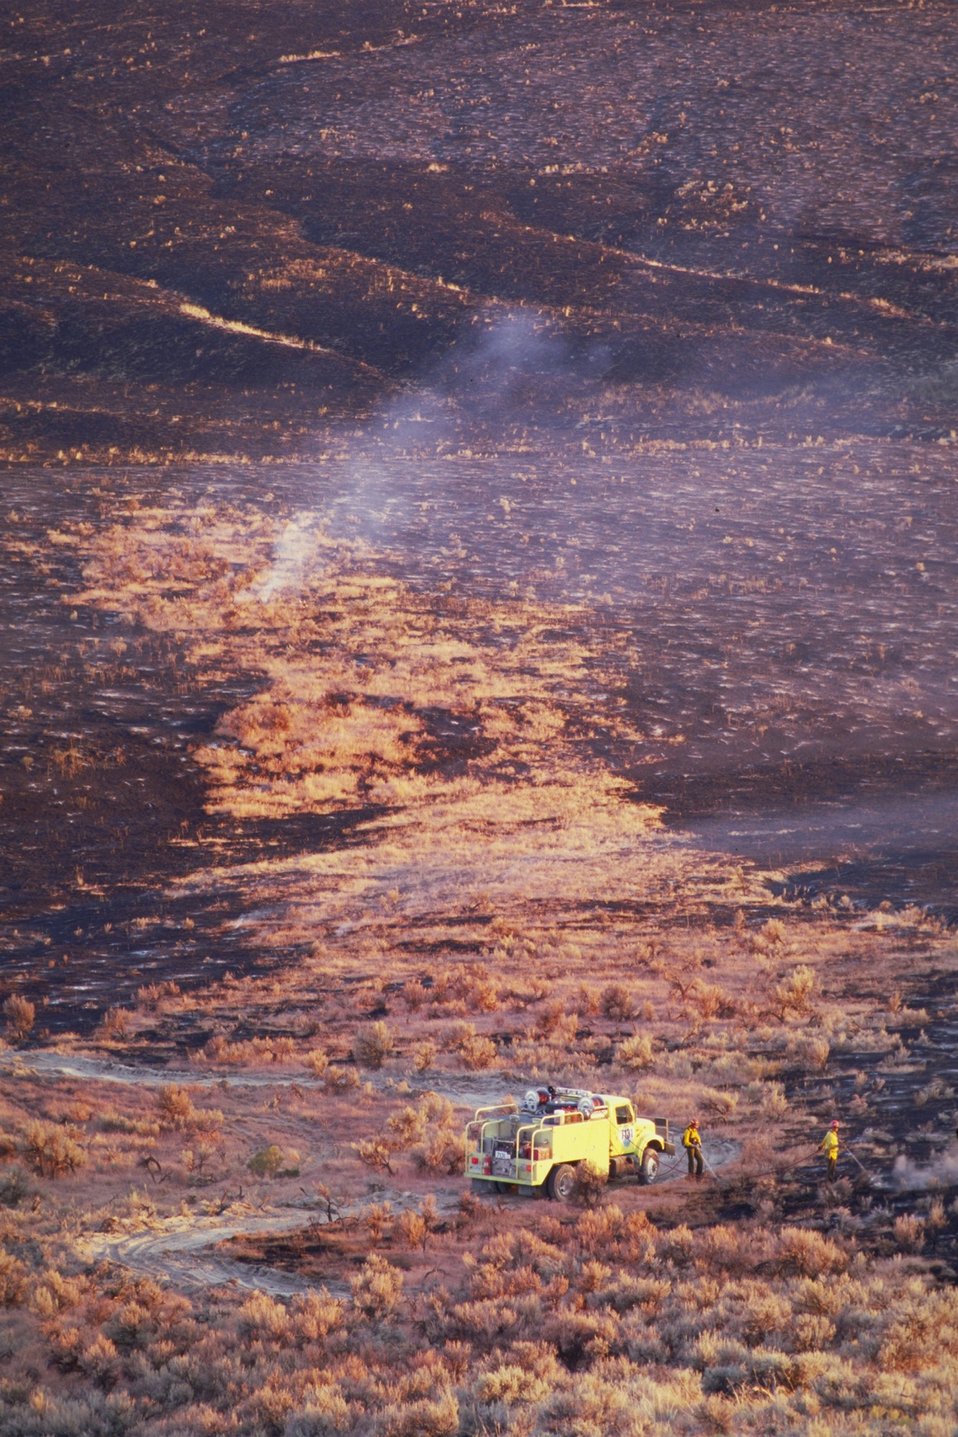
Burnt rangeland Fire Season 2000 Lower Snake River District LSRD